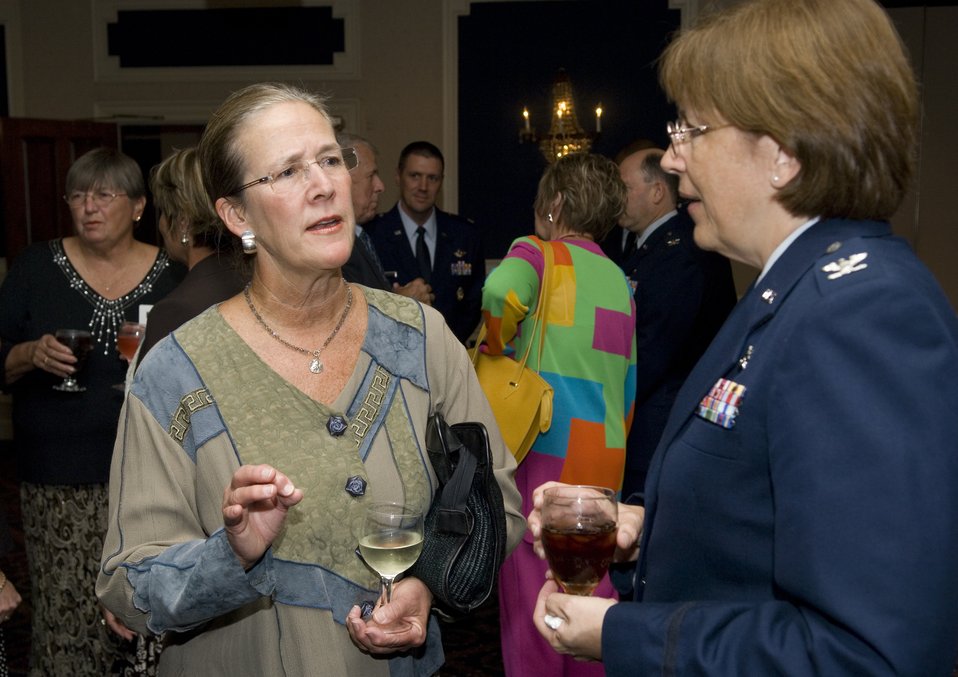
Female leaders from Omaha, Air Force gather at Offutt

Dr. Michelle Knolla and Col. Linda Eaton talk during the Ten Dinner Aug. 14 in the Patriot's Club at Offutt Air Force Base, Neb. Dr. Knolla is an obstetrician/gynecologist with the Methodist Physician Clinic and Colonel Eaton is the commander of the Ehrling Bergquist Clinic at Offutt AFB.